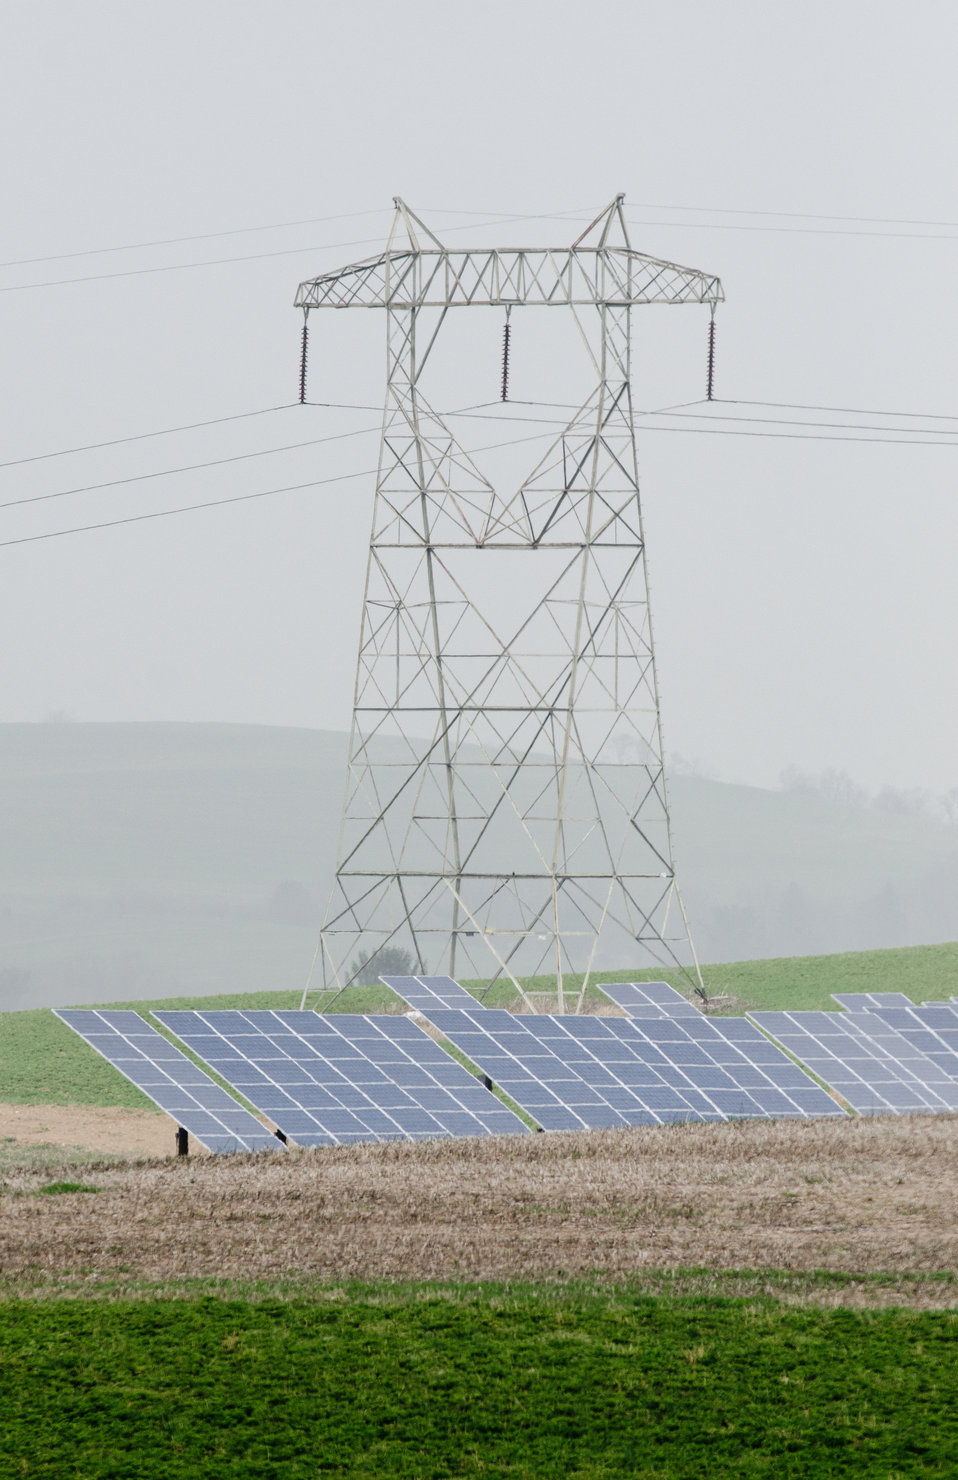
Heidel Hollow Farms has been a family owned farm since 1852 and is currently an 1,800 acre operation in Germansville, PA. Led by David Fink, President of Heidel Hollow Farms, they mainly produce and compact hay for export and grow produce on 300 acres for local sale. With the financial help of the U.S. Department of Agriculture (USDA) an 896 panel solar array was recently installed on non farmable diversion ditches. Rated at 200 kilowatts, they project 240 megawatts of electricity to be produced each year, providing up to 70% of the farms electrical needs. Electrical energy is sent into the local power grid for credit and draw power from the grid with preexisting connections. Photograph was taken on Wednesday, April 20, 2011.